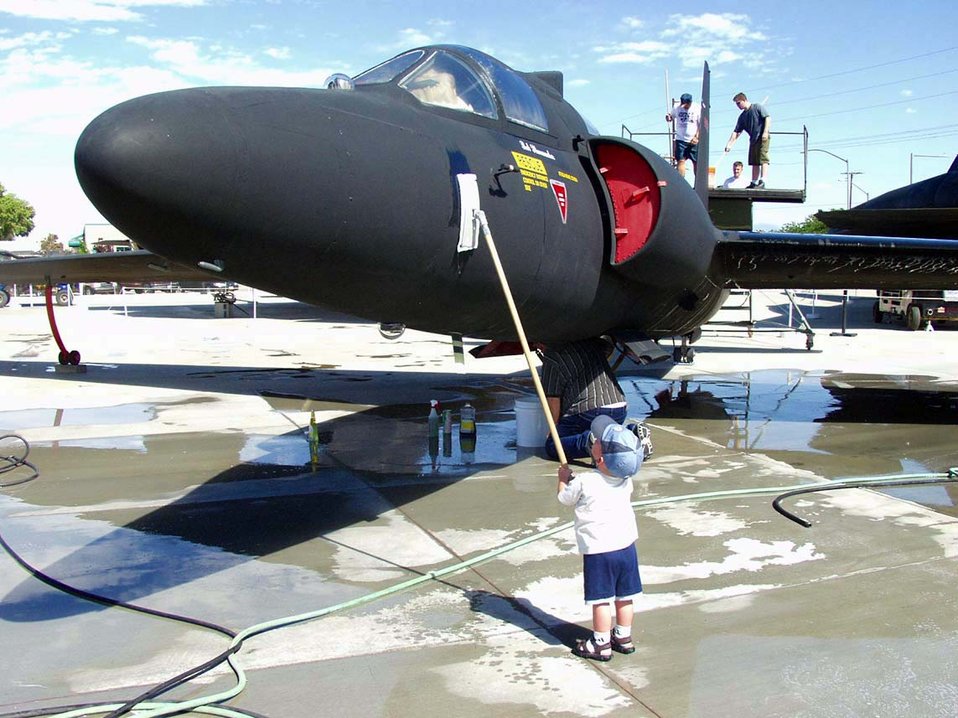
Scrubbing the Dragon Lady

EDWARDS AIR FORCE BASE, Calif. -- A future airman of 410th Flight Test Squadron here washes a U-2D Dragon Lady at the Blackbird Airpark in the nearby city of Palmdale.